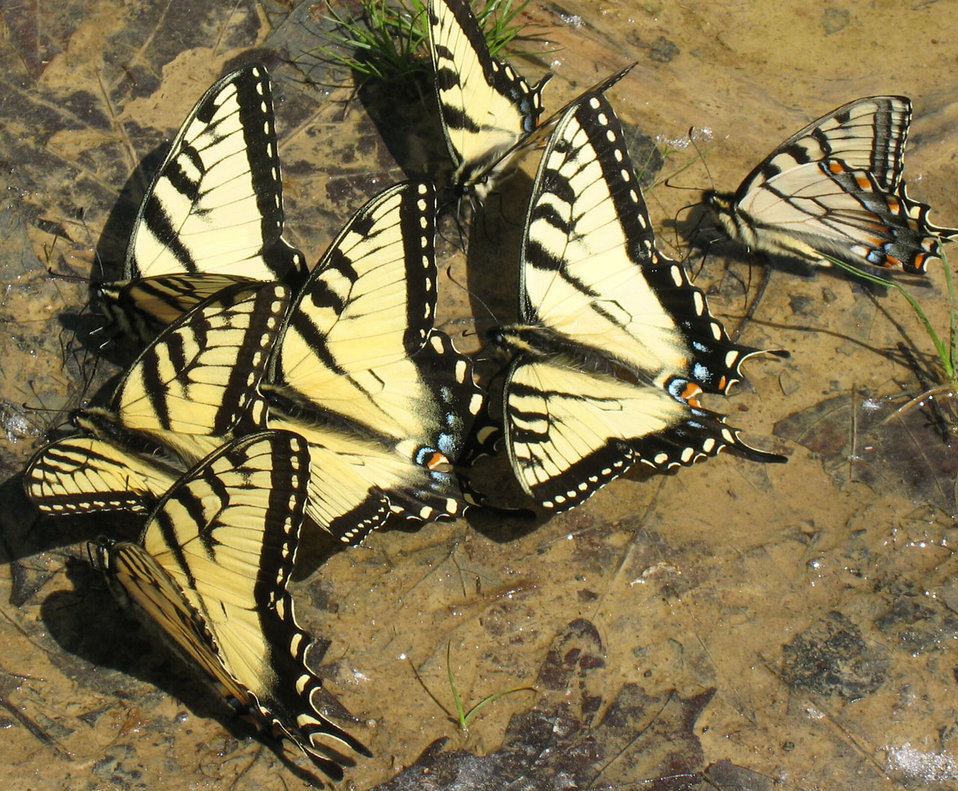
Butterflies drinking

A group of butterflies stopped at a little puddle.